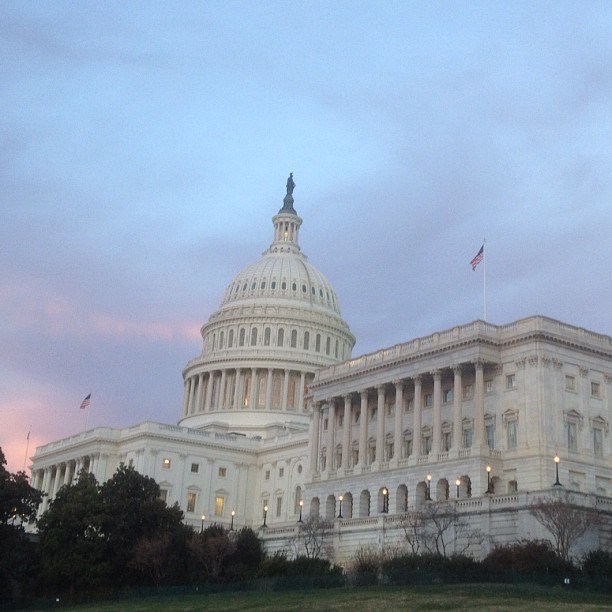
Perfect 66 degrees in #dc for Capitol Christmas Tree lighting. #capitolchristmas